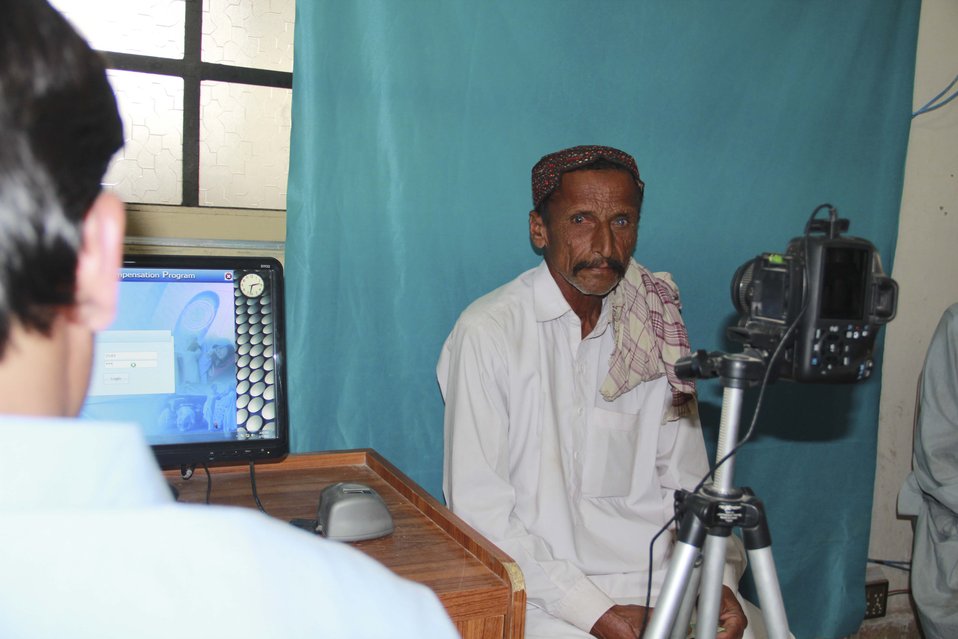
Citizens Damage Compensation Program